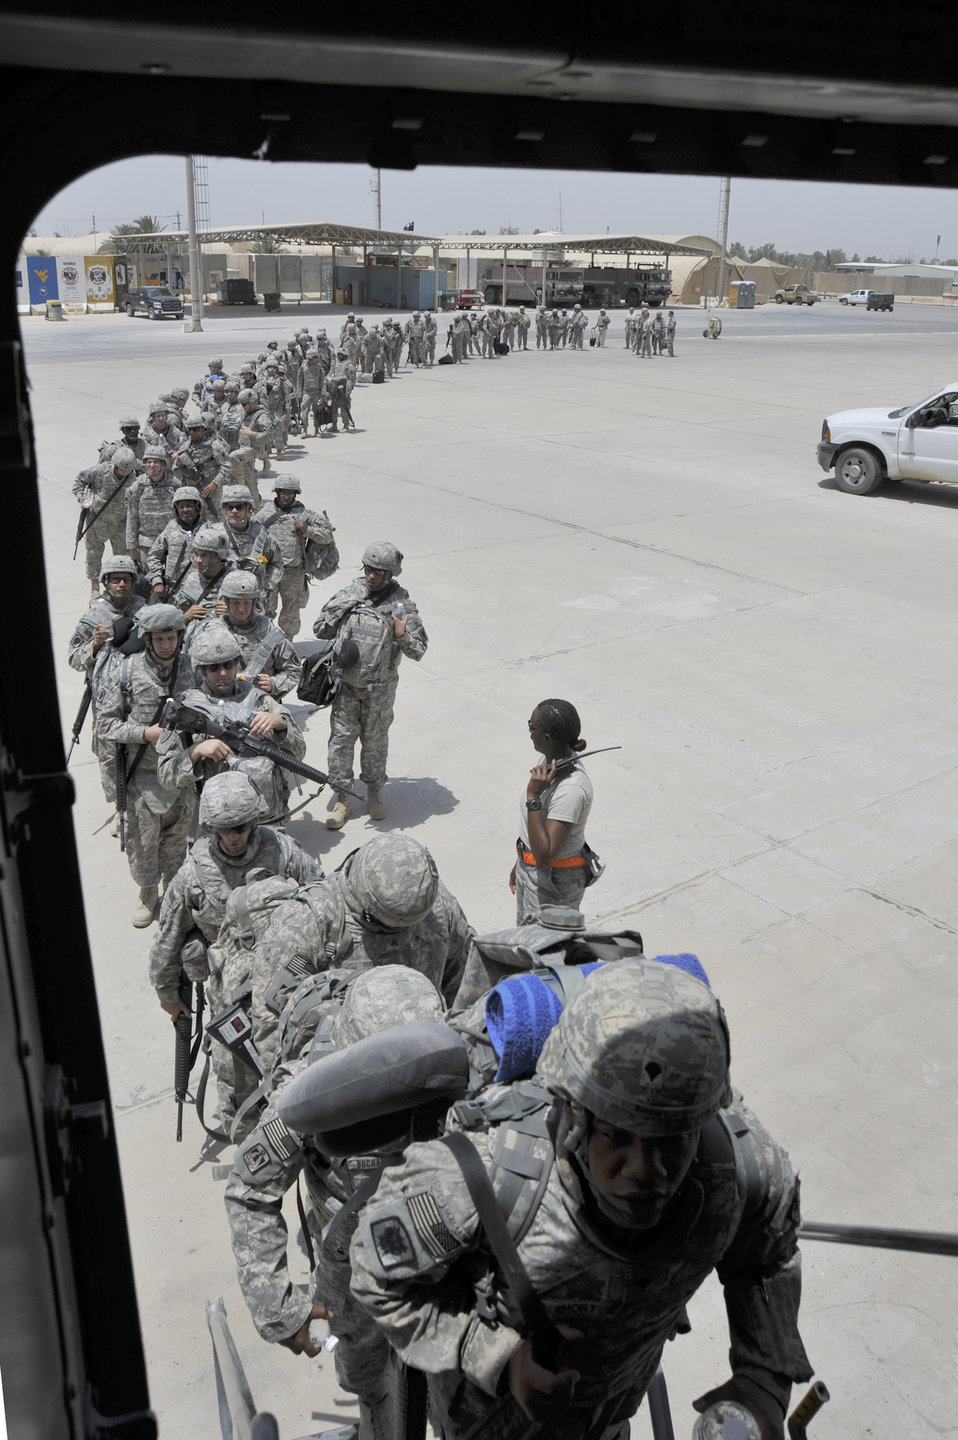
Air Force assets play vital role in Iraq Drawdown

Members of Charlie Company, of the 67th Expeditionary Signal Battalion, board a C-17 Globemaster III July 10, 2010, at Sather AB, Iraq. Charlie Co. is redeploying to their home unit as part of the scheduled drawdown to 50,000 troops in Iraq by August 31, 2010.